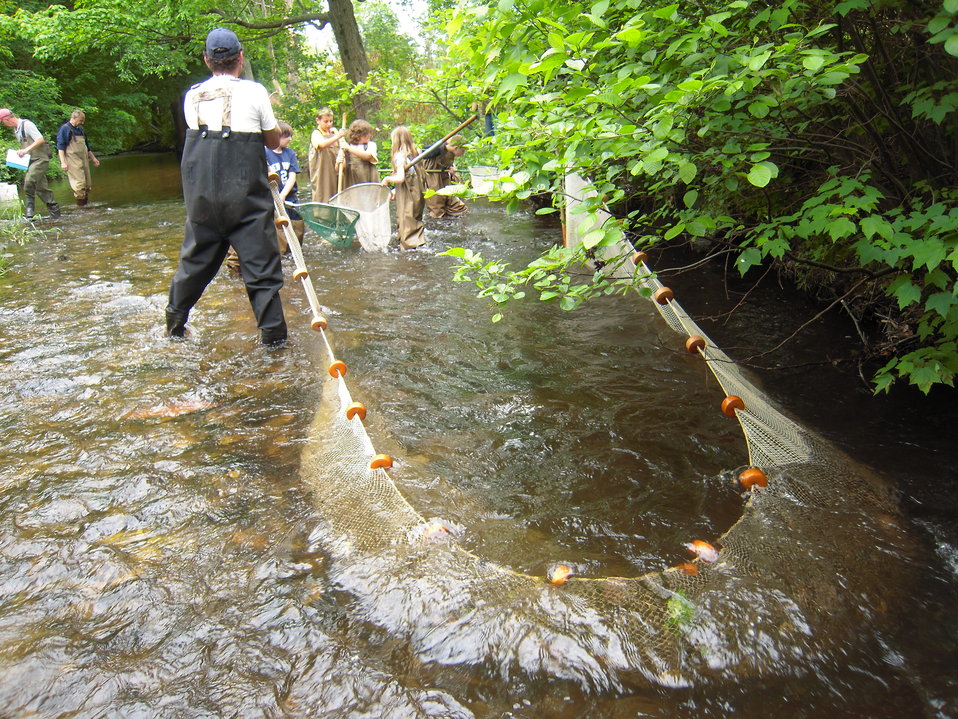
Larger net set to catch stream species